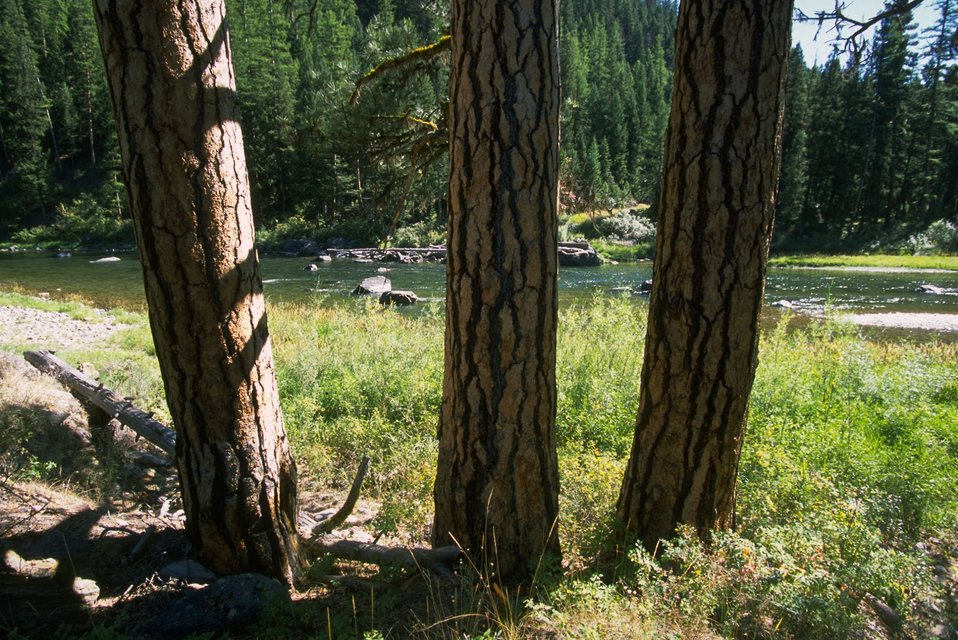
Old growth Pondersosa pine along Blackfoot River